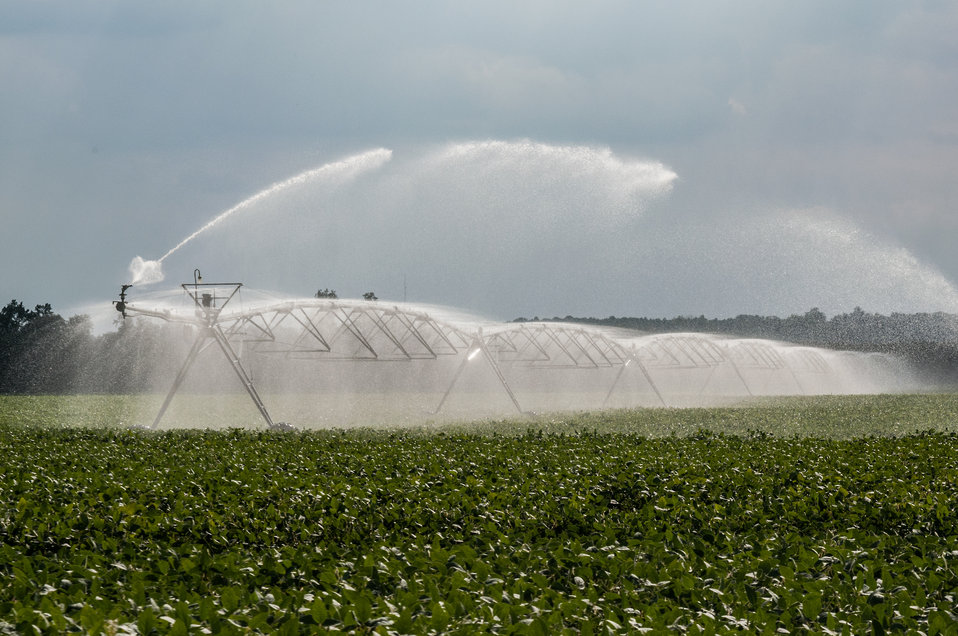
Pivot irrigation with rotating and end gun style pivot sprinkler in Hanover, Virginia, on Friday, Sept. 20, 2013.